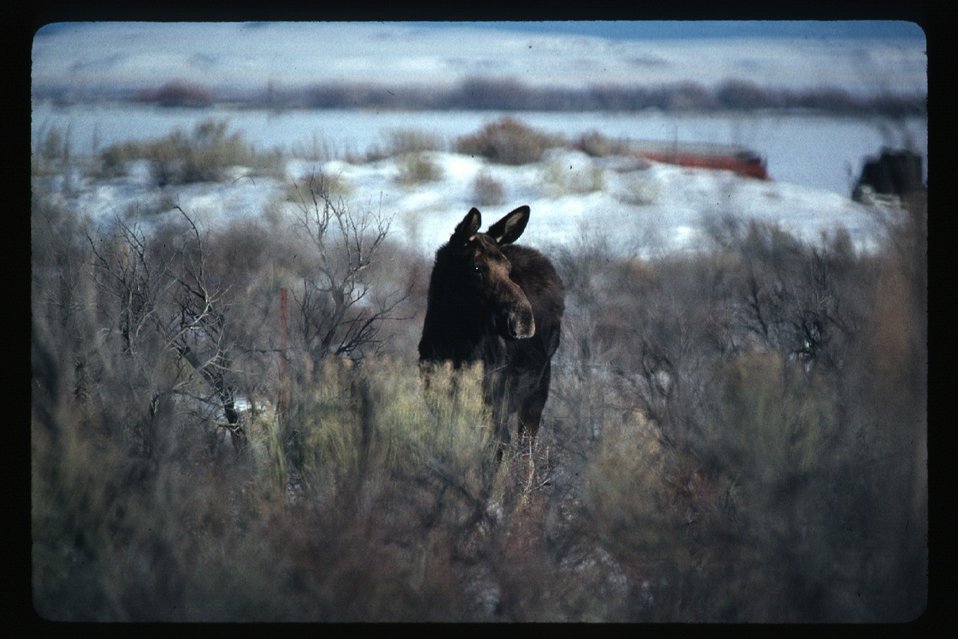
Moose Wildlife USRD Upper Snake River District